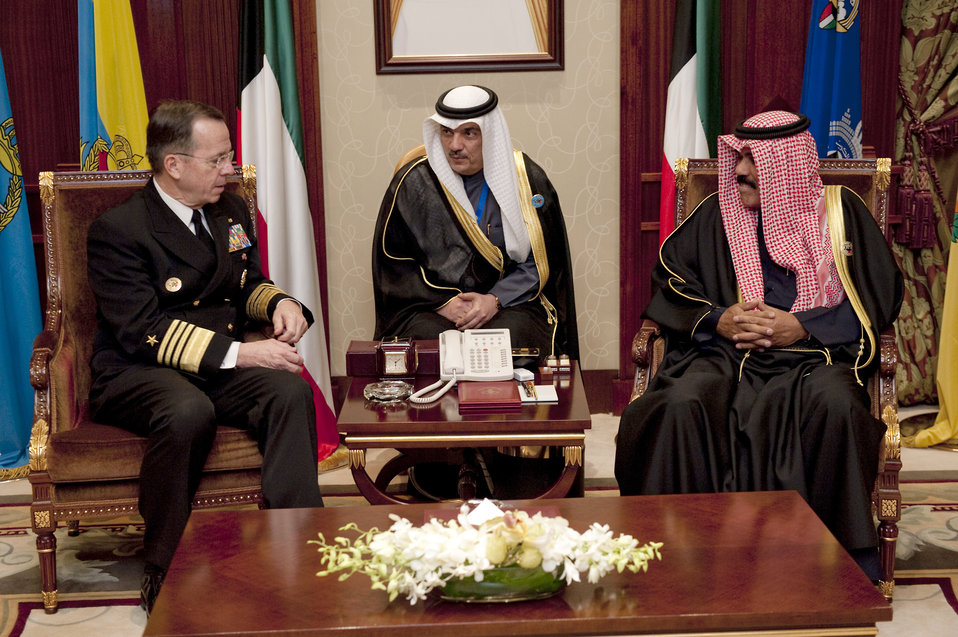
Admiral Mullen

Chairman of the Joint Chiefs of Staff Navy Adm. Mike Mullen meets with Kuwaiti Crown Prince Sheikh Nawaf Al-Ahmad Al-Jaber Al-Sabah as an interpreter assists Feb. 26, 2011, in Kuwait City.